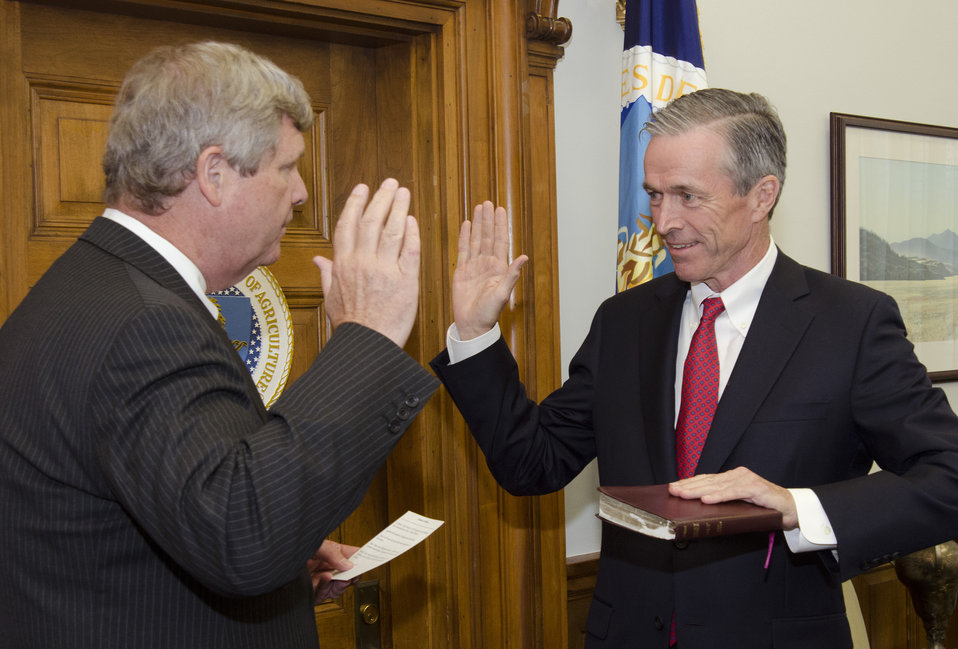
Agriculture Secretary Tom Vilsack swears in Matt McKenna as the Investment and Foundation Advisor at a ceremony at the U.S. Department of Agriculture (USDA) in Washington, D.C. on Tuesday, Jun. 18, 2013.